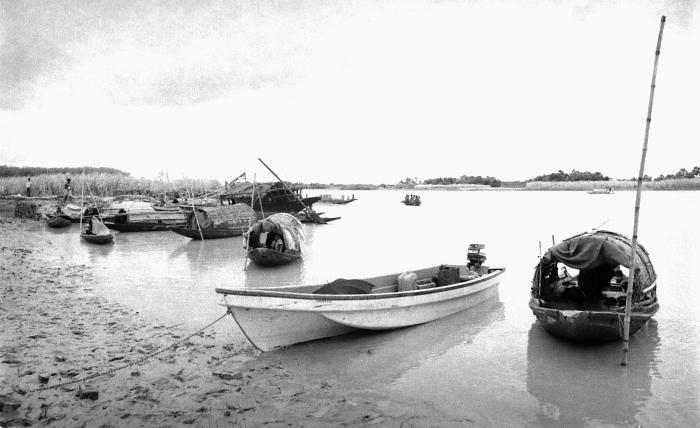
This photograph, depicting a speed boat alongside a 'country boat' on a river, captured by Pierre Claquin, M.D., B.A.C., who at the time was a member of the World Health Organization's Smallpox Eradication Program. Provided by former E.I.S. officer, Stanley O. Foster M.D., M.P.H., it was one of a series entitled 'The Story of One Smallpox Jeep', depicting the travails faced by the jeep, and its occupants of public health practitioners, as they road through the Bangladesh countryside in an attempt to eradicate smallpox from the country. During the in-country efforts by E.I.S. officers and local public health practitioners, the country boat method of travel was widely used.